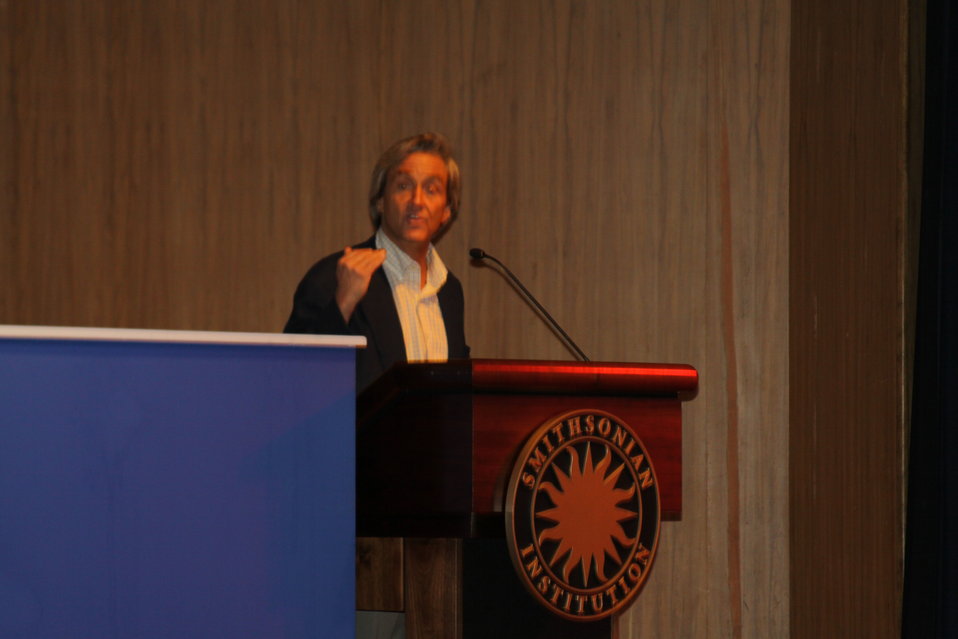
March 12, 2010- Smithsonian Broadband with Elmo